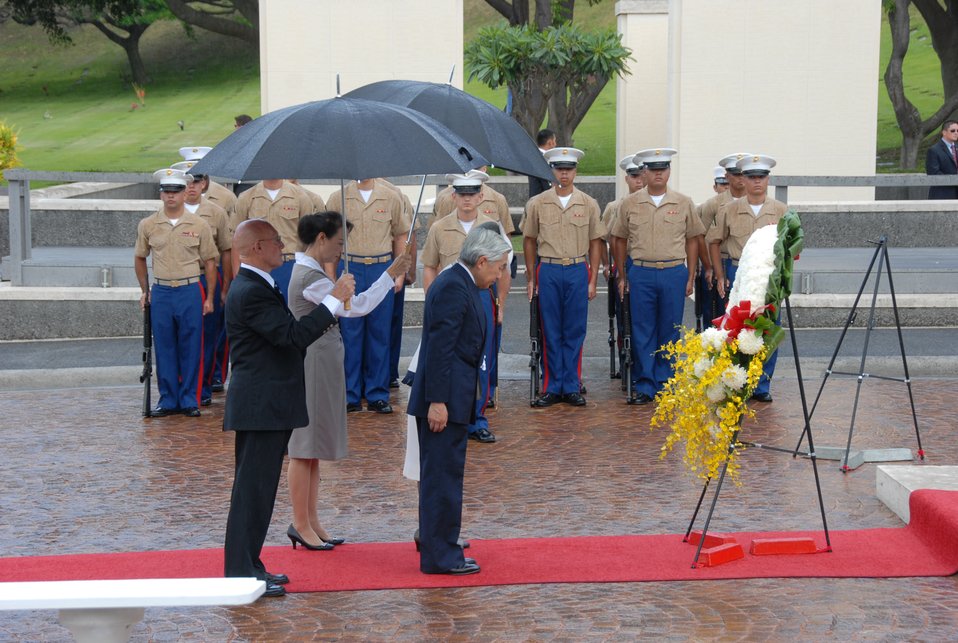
Japanese royalty honors America's fallen

Japanese Emperor Akihito and Empress Michiko bow to pay tribute to the interred at the National Memorial Cemetery of the Pacific at Punchbowl Crater, Hawaii. The ceremony included the laying of a chrysanthemum wreath, the playing of